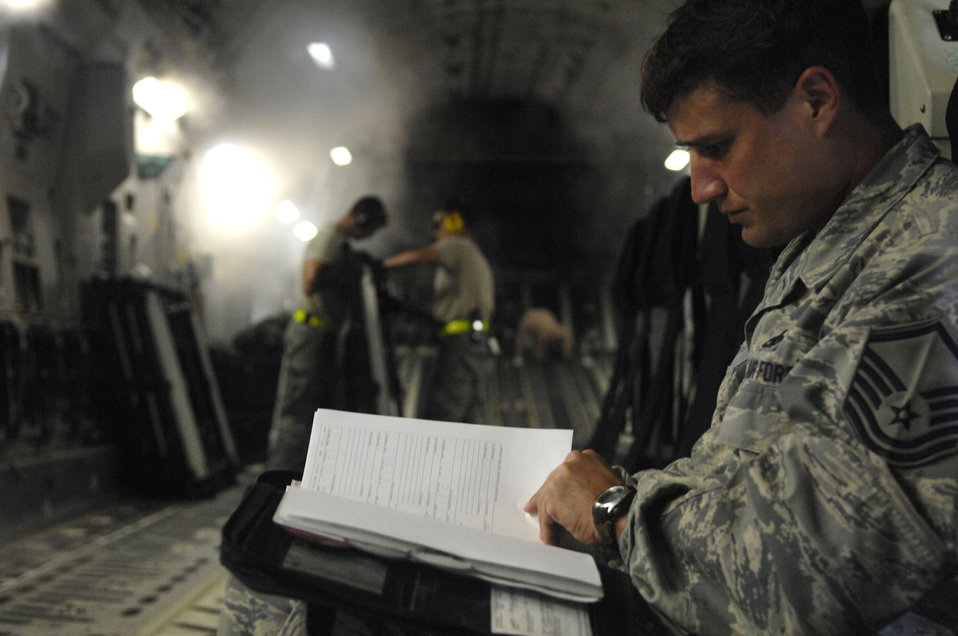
Hickam aircrew delivers vehicles to warfighters

Master Sgt. Daniel Buse reviews forms in a C-17 Globemaster III en route to Afghanistan. Sergeant Buse is assigned to the 734th Air Mobility Squadron from Andersen Air Force Base, Guam.